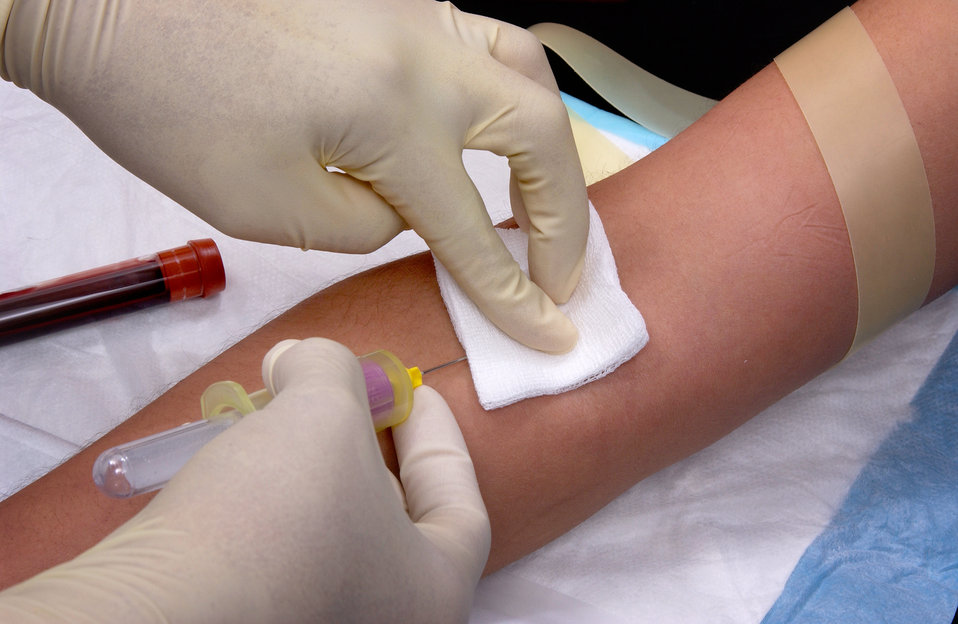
This image depicts a trained phlebotomist, i.e., a technician skilled in the practice of drawing blood from a patient, who was performing a percutaneous antecubital venipuncture into this patient's right antecubital vein. This image is the fourteenth in a series of 19 images outlining the steps involved in extracting blood during the venipuncture process.